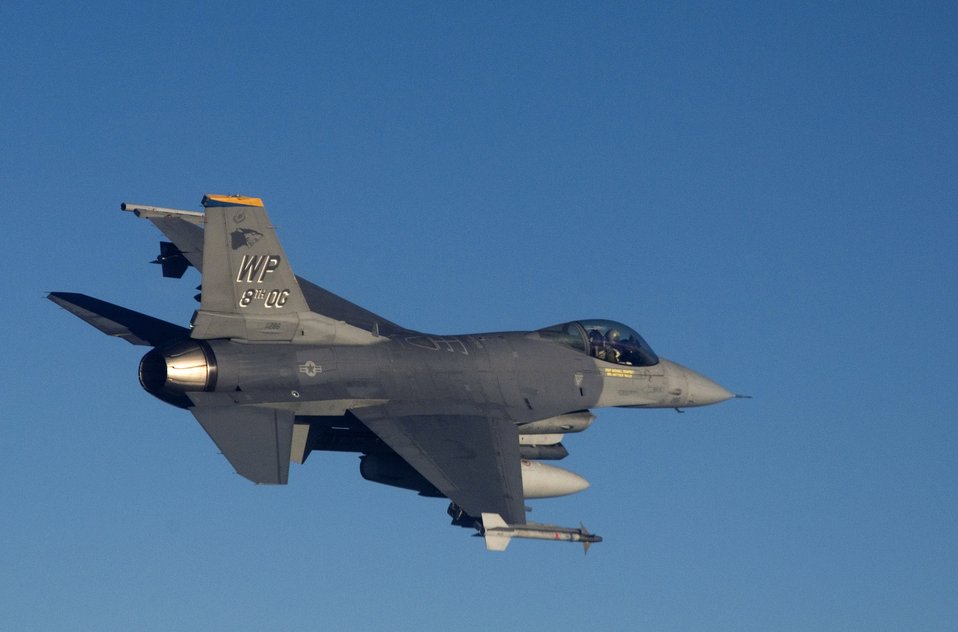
Close Air Support

Capt. Joshua King, an F-16 Fighting Falcon pilot assigned to the 80th Fighter Squadron at Kunsan Air Base, South Korea, searches for his target while flying over a designated training area Nov. 29 while participating in a close-air-support training mission. Pilots use such missions to simulate actual conditions they may face in combat and keep their war-fighting skills honed.